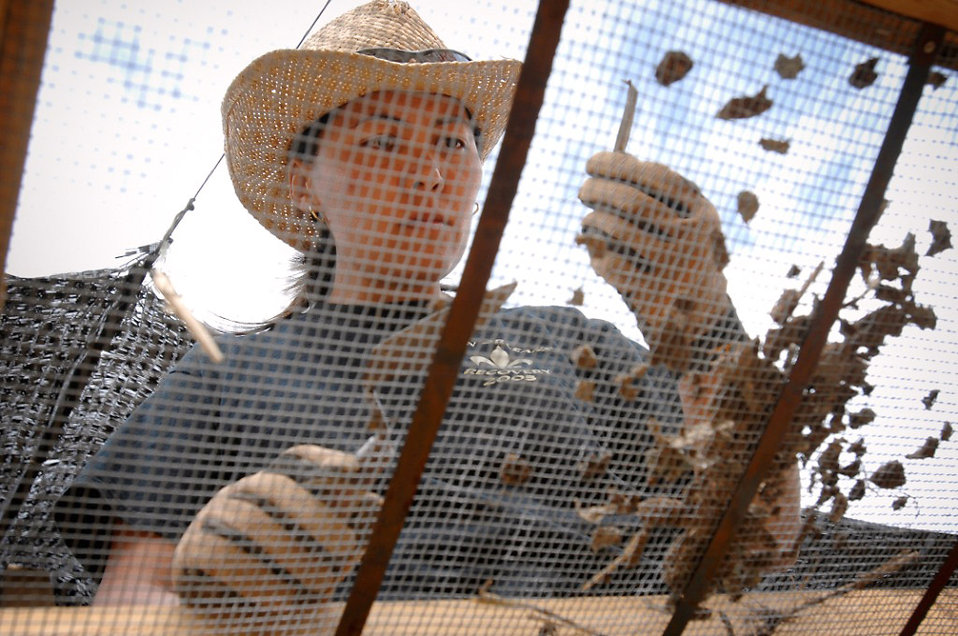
JPAC teams serve on front lines of recoveries

Joint POW/MIA Accounting Command forensic anthropologist Denise To examines debris that was recovered at a site in a wheat field outside of Strass village in Germany. The JPAC recovery team was there last month to recover the remains of a missing World War II fighter pilot.